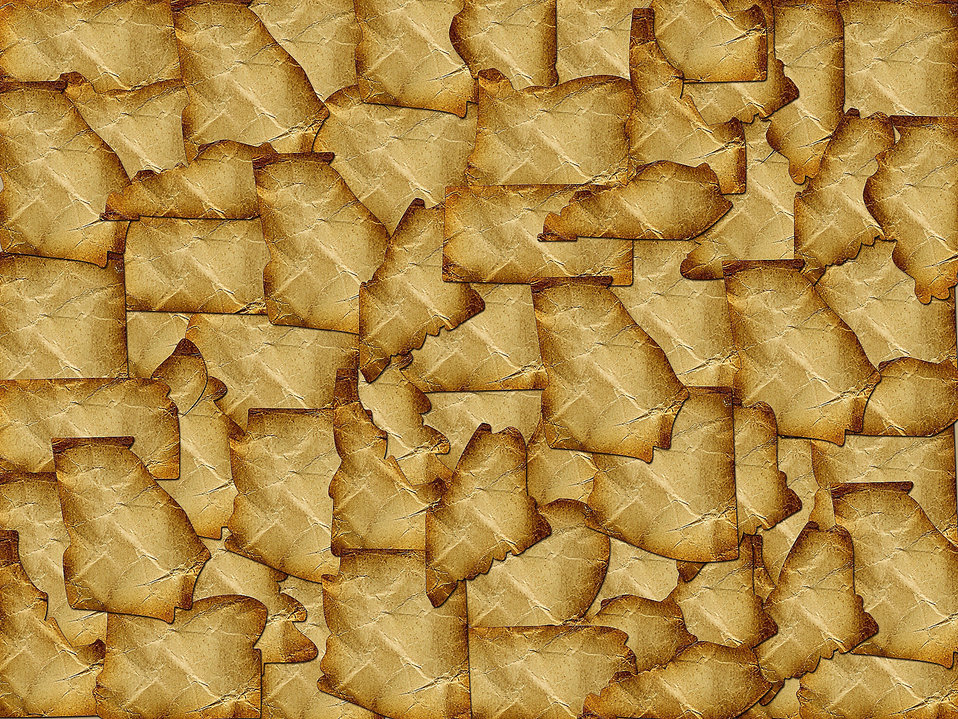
Background 327

Background.